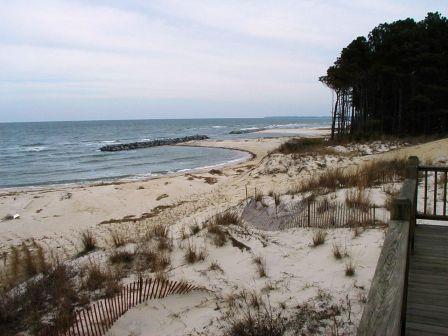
Offshore breakwater system

The following are images of an offshore breakwater system at Savage Neck in Northampton County, Virginia.